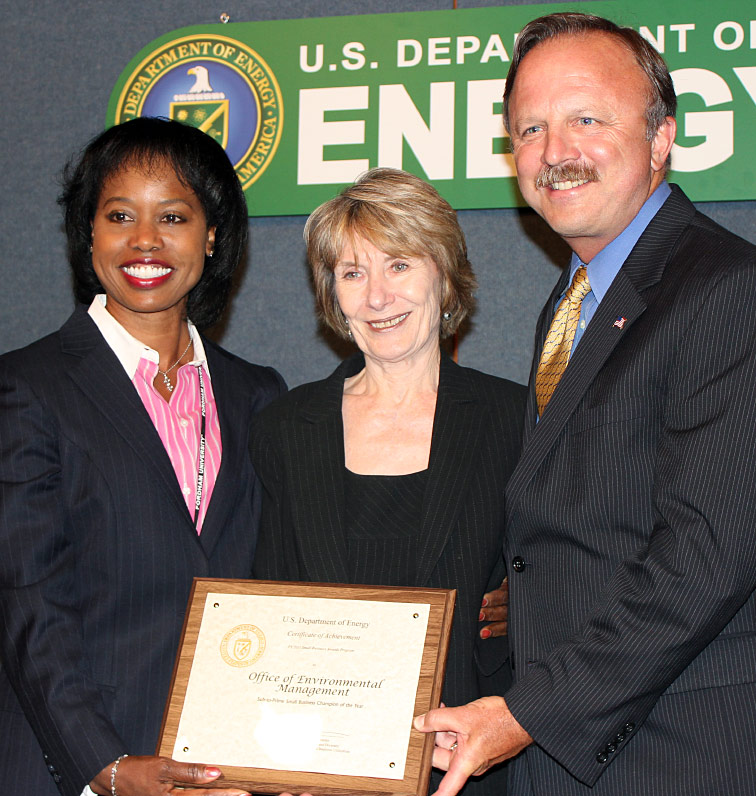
EM Wins DOE Award for Role as Small Businesses Advocate

DOE on Wednesday honored EM as the inaugural recipient of a new award for extraordinary efforts to expand contract opportunities for small businesses.

DOE Office of Economic Impact and Diversity Director Dot Harris, left, presents the Sub-to-Prime Small Business Champion of the Year Award to EM Small Business Advocate Kay Rash, center, and EM Deputy Assistant Secretary for Acquisition and Project Management Jack Surash during DOE’s Fiscal Year 2011 DOE Secretarial Small Business Awards Program Wednesday.